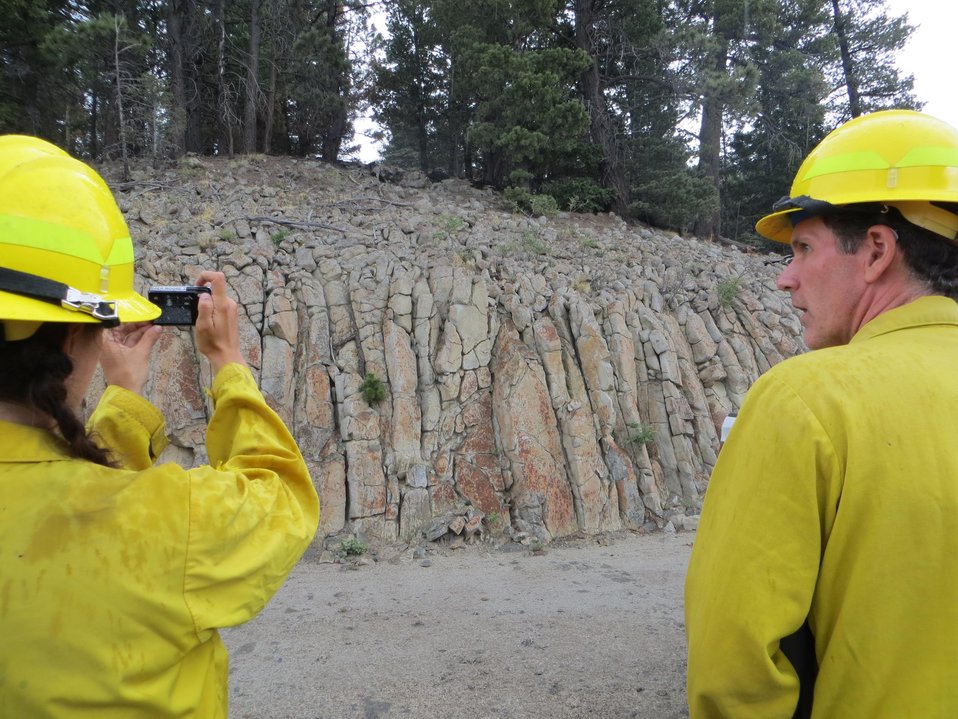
Burned Area Emergency Response (BAER) team inspects Rhyolite (igneous rock) parent material off VC06 Road near Redondito after the Thompson Ridge Fire in the Sante Fe National Forest in New Mexico. The Thompson Ridge Fire in the Sante Fe National Forest approximately 10 miles north of Jemez, NM began on May 31, 2013 by human ignition consumed over 23, 965 acres. BAER is a rapid assessment of burned watersheds by a BAER team to identify imminent post-wildfire threats to human life and safety property and critical natural or cultural resources on National Forest System lands and take immediate actions to implement emergency stabilization measures before the first major storms. Fires result in loss of vegetation exposure of soil to erosion and increased water runoff that may lead to flooding increased sediment debris flows and damage to critical natural and cultural resources. BAER team members implement seeding and mulching installation to prevent erosion, erect temporary water run-off control structures that will protect recovering areas, and installation of warning signs, replace safety related facilities, remove safety hazards, prevent permanent loss of habitat for threatened and endangered species, and prevent the spread of noxious weeds and protect critical cultural resources.